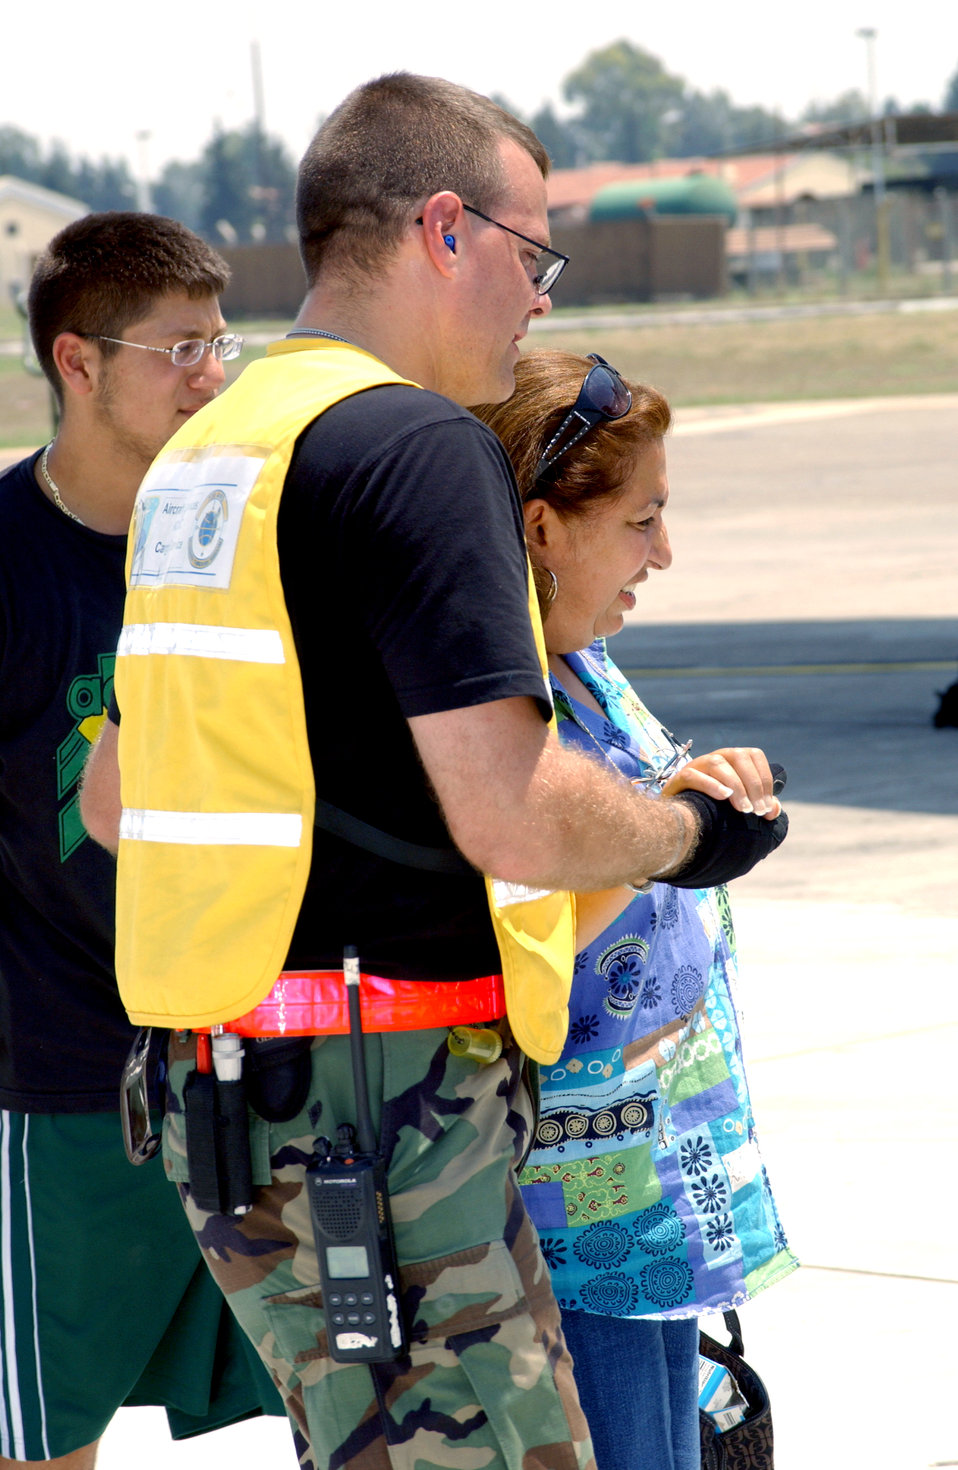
Incirlik pulls together as hundreds transit base

Tech. Sgt. Kevin Drake assists American citizens as they prepare to leave Incirlik Air Base ,Turkey, on July 25. The Americans had stopped at Incirlik on their way to the United States. Sergeant Drake is with the 728th Air Mobility Squadron.